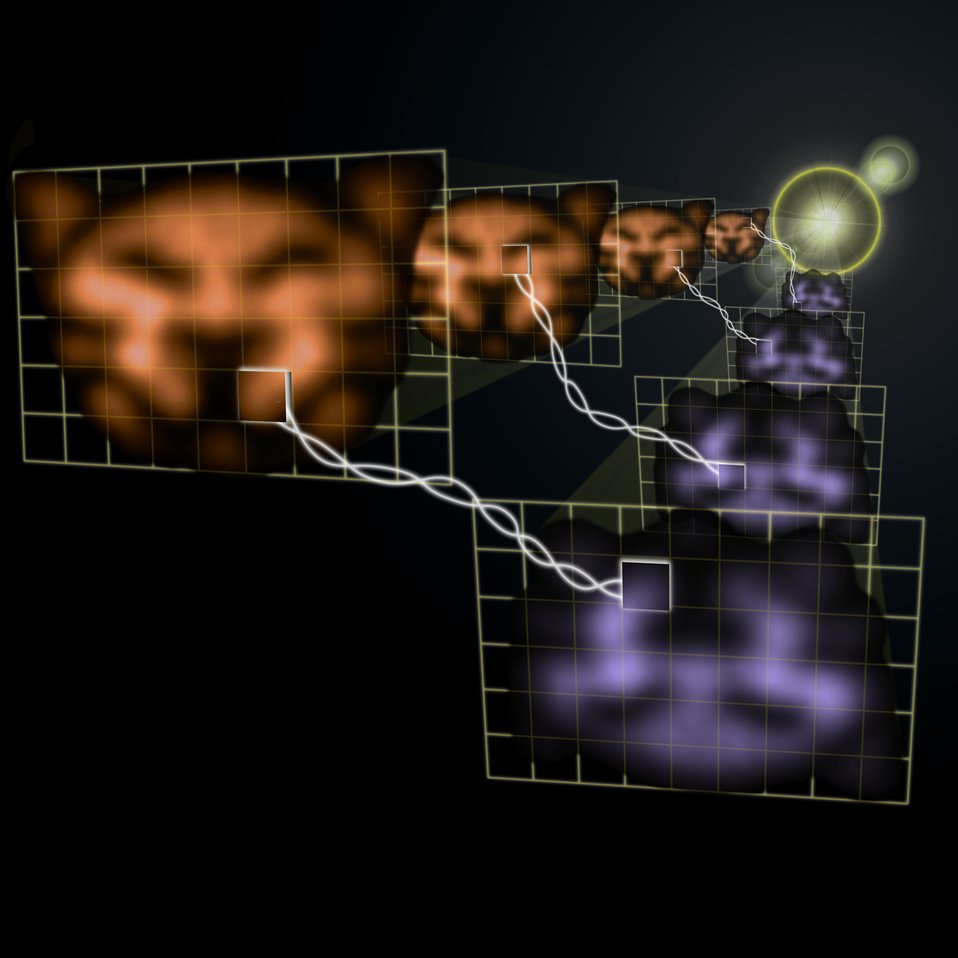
Quantum Images

In this photo montage of actual quantum images, two laser beams coming from the bright glare in the distance transmit images of a cat-like face at two slightly different frequencies (represented by the orange and the purple colors). The twisted lines indicate that the seemingly random changes or fluctuations that occur over time in any part of the orange image are strongly interconnected or entangled with the fluctuations of the corresponding part in the purple image. Though false color has been added to the cats' faces, they are otherwise actual images obtained in the experiment.